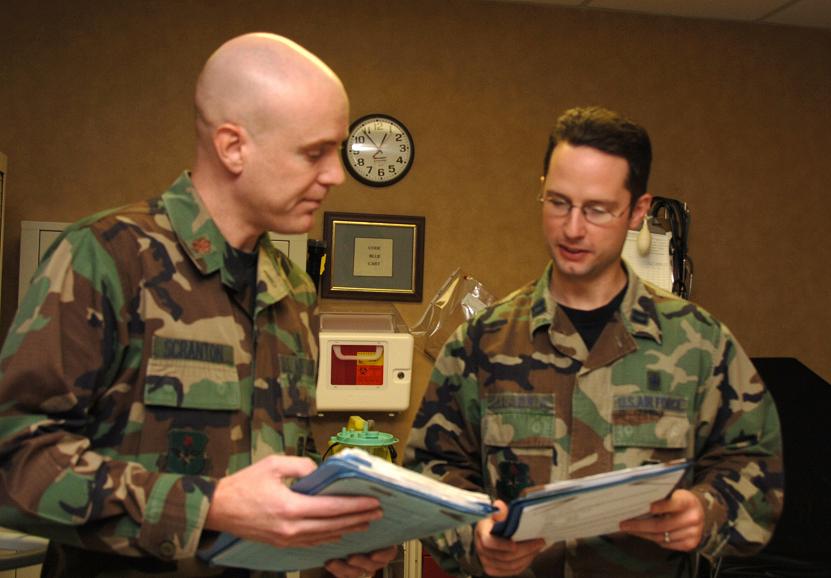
Air Force allergy doctors win FIT competition

Maj. (Dr.) Stephen Scranton (left) and Capt. (Dr.) Chris Calabria, 759th Medical Operations Squadron, allergy and immunology fellows, discuss symptoms and treatment of a patient Dec. 5 at Wilford Hall Medical Center on Lackland Air Force Base, Texas. The doctors teamed up to win the 15th Annual American College of Allergy, Asthma and Immunology Fellows-in-Training Bowl held Nov. 6 in Philadelphia.